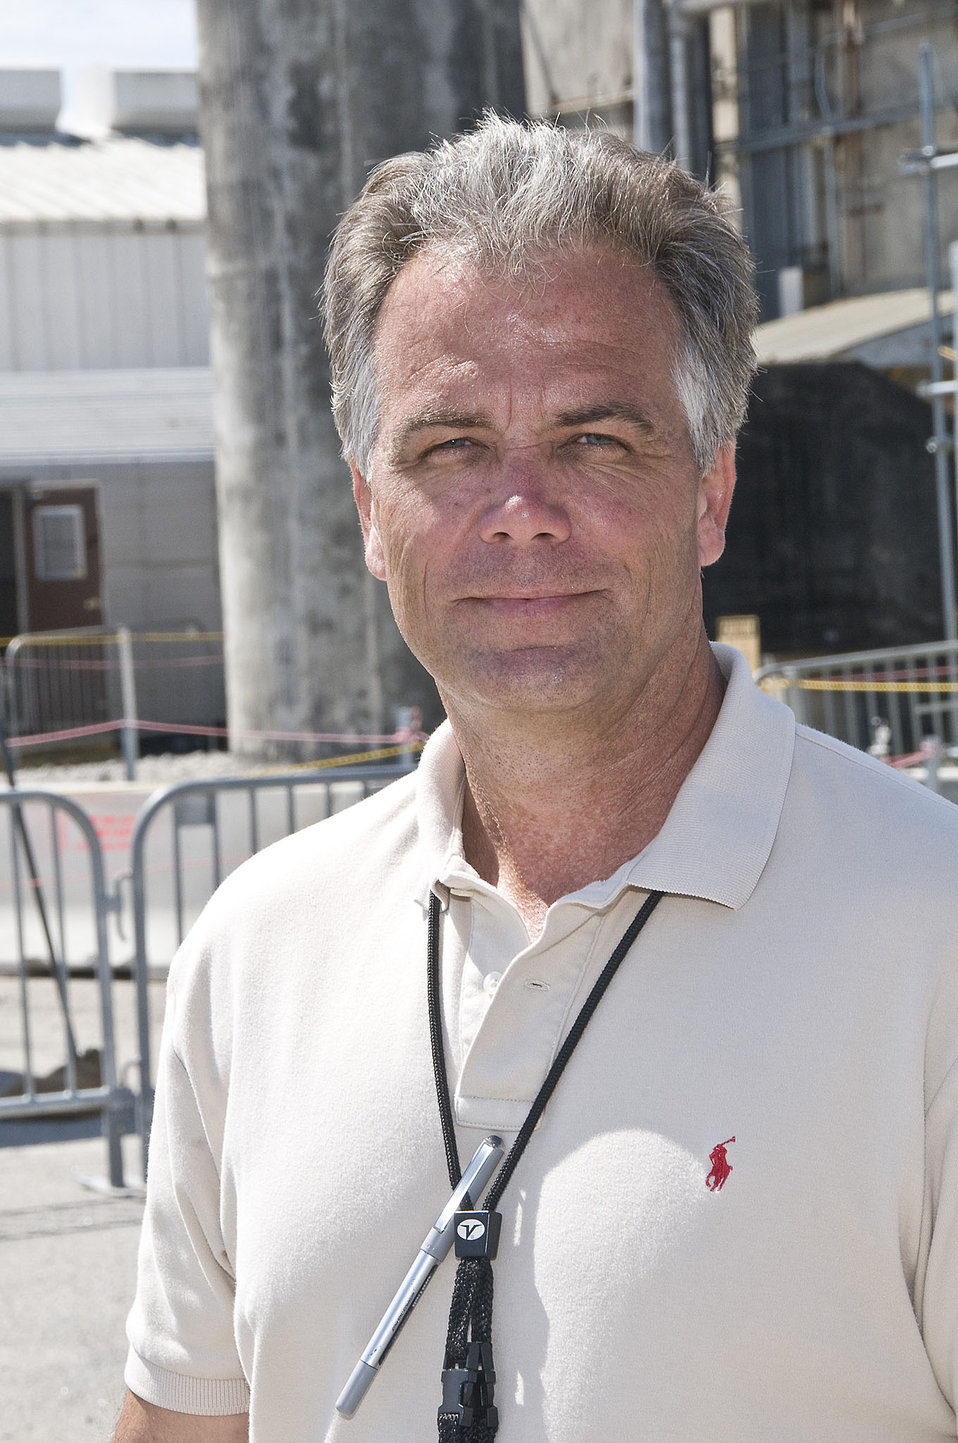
Safety and Training Key to Stack Reduction Demolition

Steve Hayes is pleased to be working on the stack reduction project.
Eleven of the 15 workers on the project are Recovery Act workers. They are reducing the height of the 75-foot stack to 28 feet. This will eliminate the possibility of the stack falling into a nearby abandoned facility that once contained plutonium.